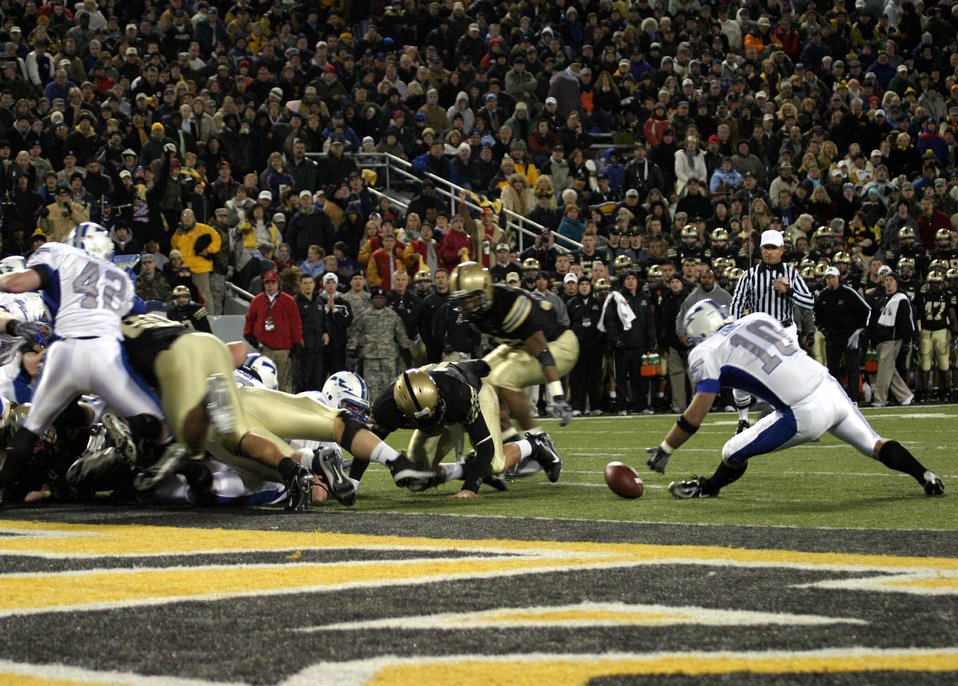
Army/AF football game

Falcon Adam Zanotti scoops up a fumble by Army quarterback Carson Williams Nov. 3 at West Point, N.Y. Zanottia returned the loose ball a record 98 yards for a touchdown. The Falcons forced two fumbles and four interceptions en route to a 43-7 win.